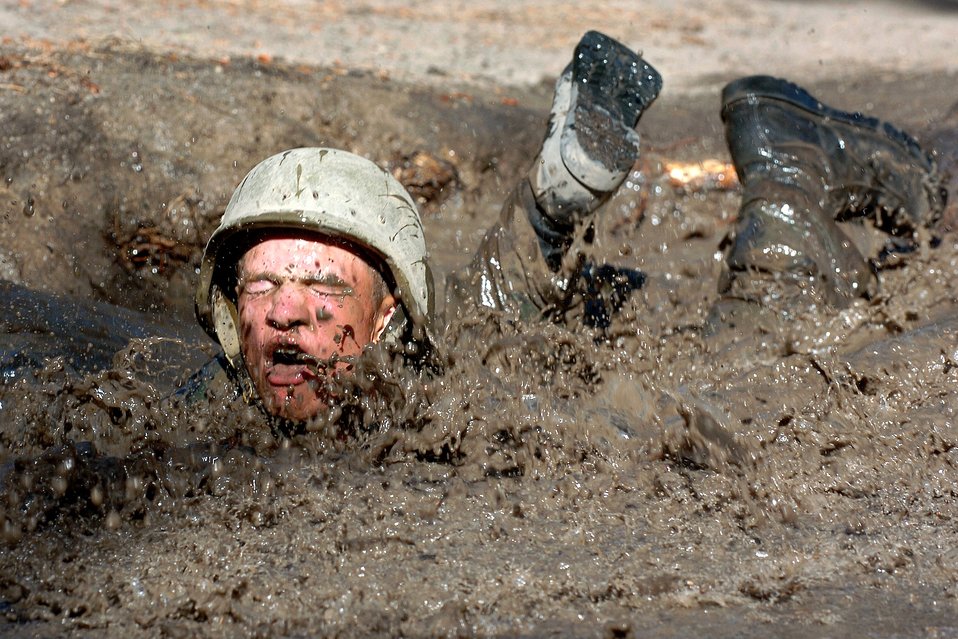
In the pit

An Academy cadet attacks the mud pit on the Jacks Valley assault course at the U.S. Air Force Academy in Colorado Springs, Colo., July 18. The assault course teaches hand-to-hand combat skills and rifle-fighting techniques, allowing basic cadets to practice these elements in controlled scenarios.